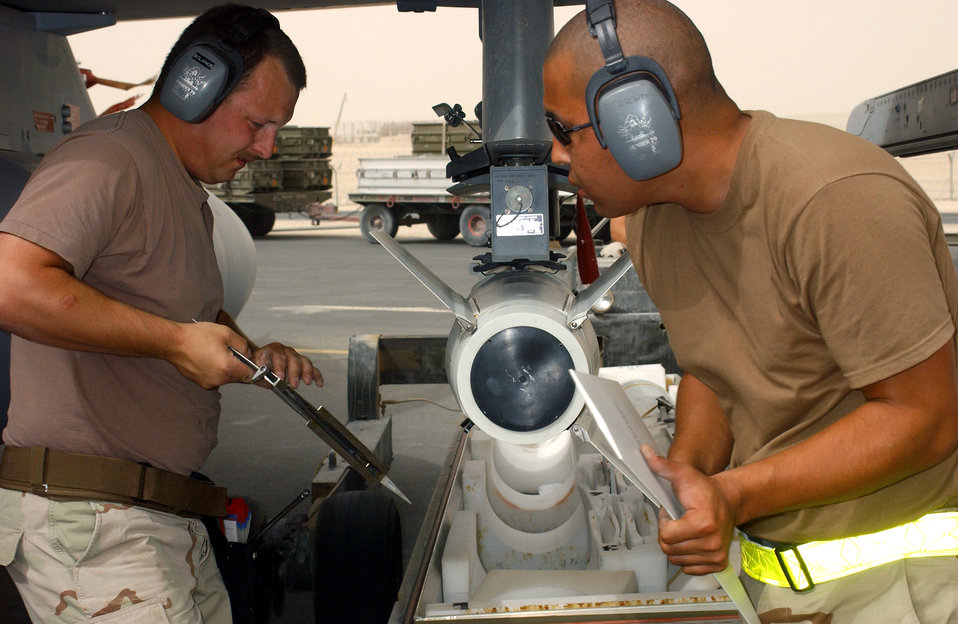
Fitting fins

OPERATION IRAQI FREEDOM -- Staff Sgt. David Ross (left) and Airman 1st Class Eduardo Sera attach fins to a missile for an F-16 Fighting Falcon at a forward-deployed location in Southwest Asia.